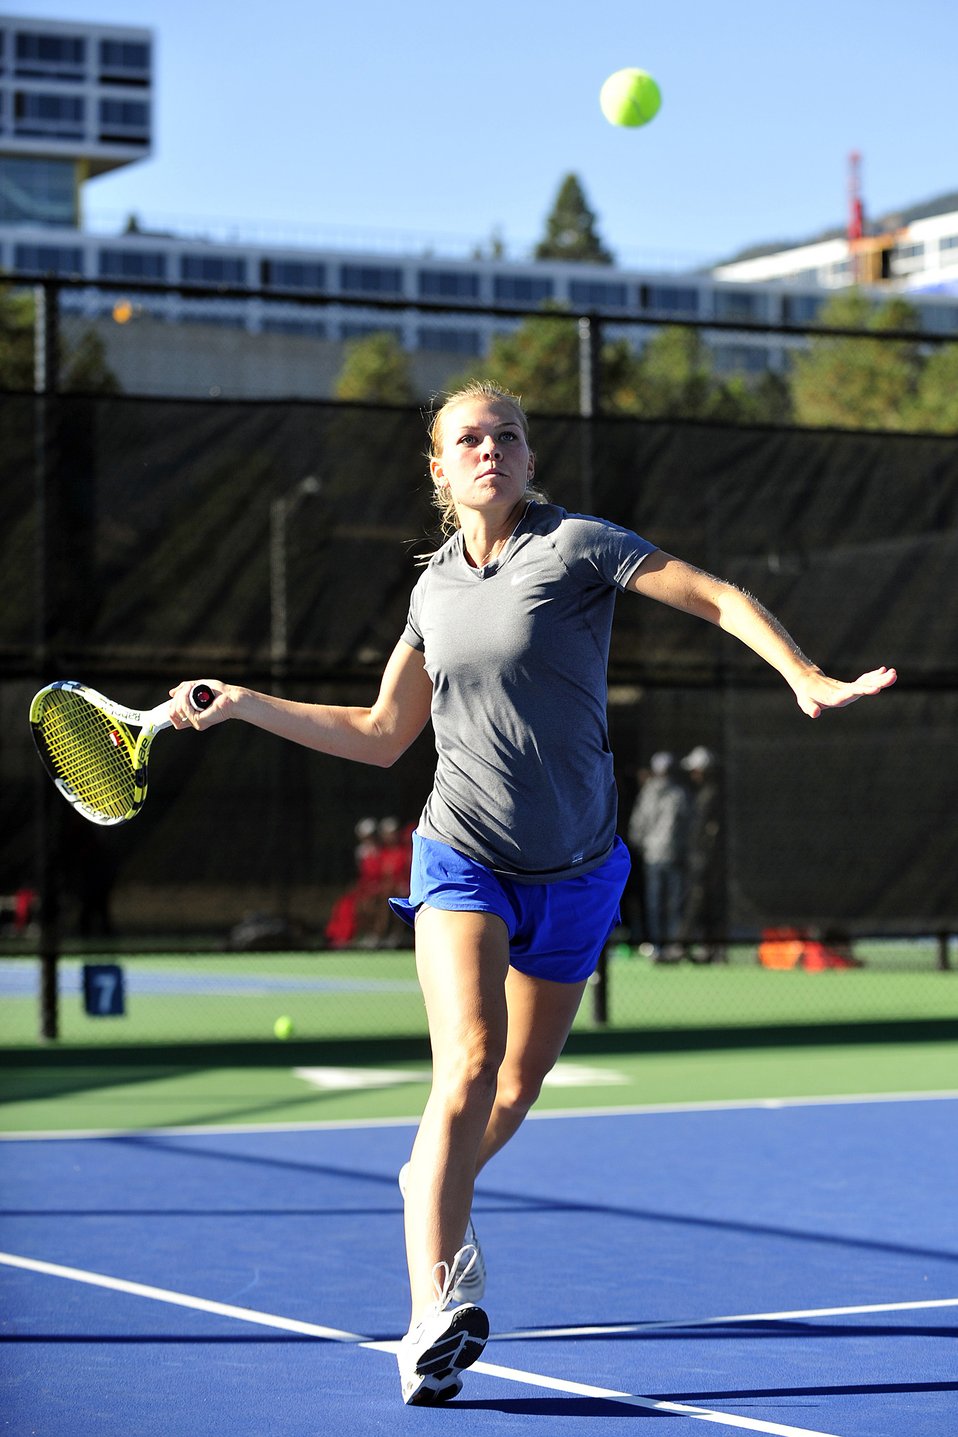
Cadets compete in tennis tournament

Air Force Academy junior Tahlia Smoke runs to return the ball during the